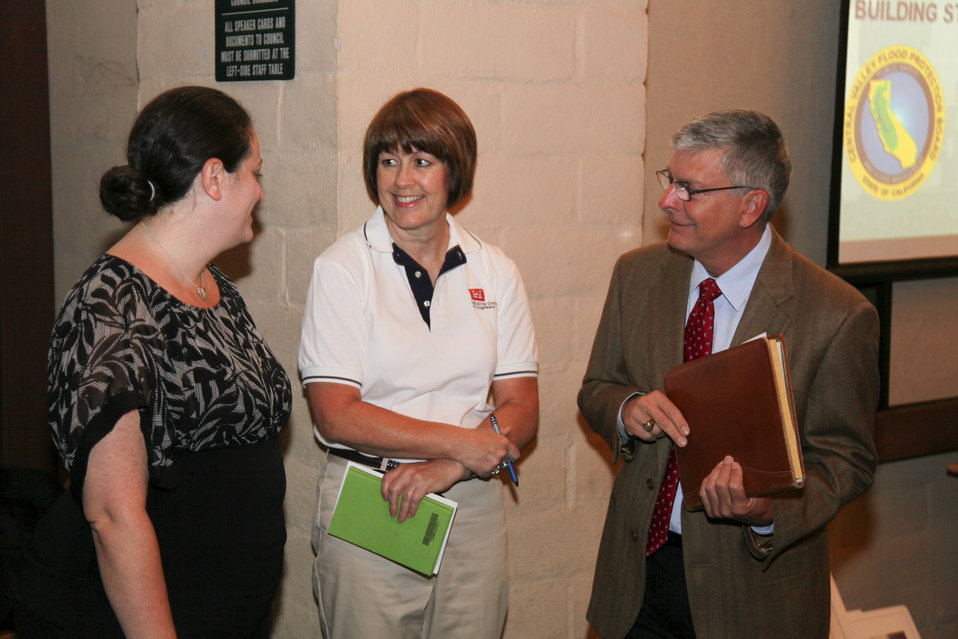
Industry Day for Phase IV of the Folsom Joint Federal Project

U.S. Army Corps of Engineers Sacramento District employees Beth Salyers (left), project manager, Sue Yarbrough (center), chief of contracting, and David Thomas, director of the Folsom Dam Joint Federal Project, speak during an Industry Day event June 7, 2012, at Folsom City Hall in Folsom, Calif. The Sacramento District hosted a pre-solicitation Industry Day for specialized underwater construction for the project’s auxiliary spillway, providing prospective contractors with information about the generalized scope and site conditions for the proposed Phase IV underwater construction. The Folsom Dam Joint Federal Project is a joint effort of the Corps, U. S. Bureau of Reclamation, the Central Valley Flood Protection Board and the Sacramento Area Flood Control Agency to improve the safety of the current dam and reduce flood risk for the greater Sacramento area.